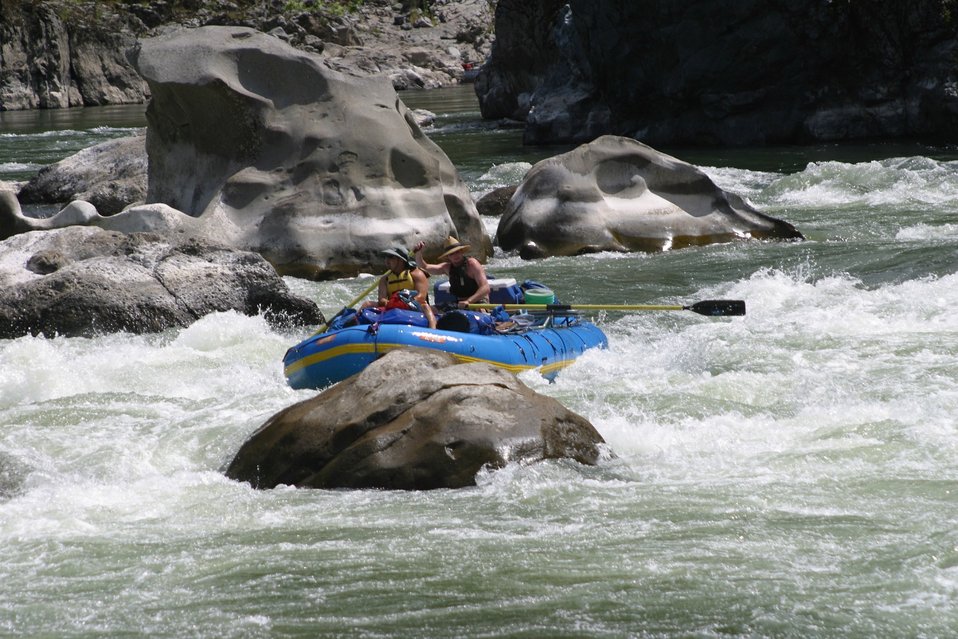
Wild section of the Rogue River from Grave Creek to Foster Bar May 19 to May 22.